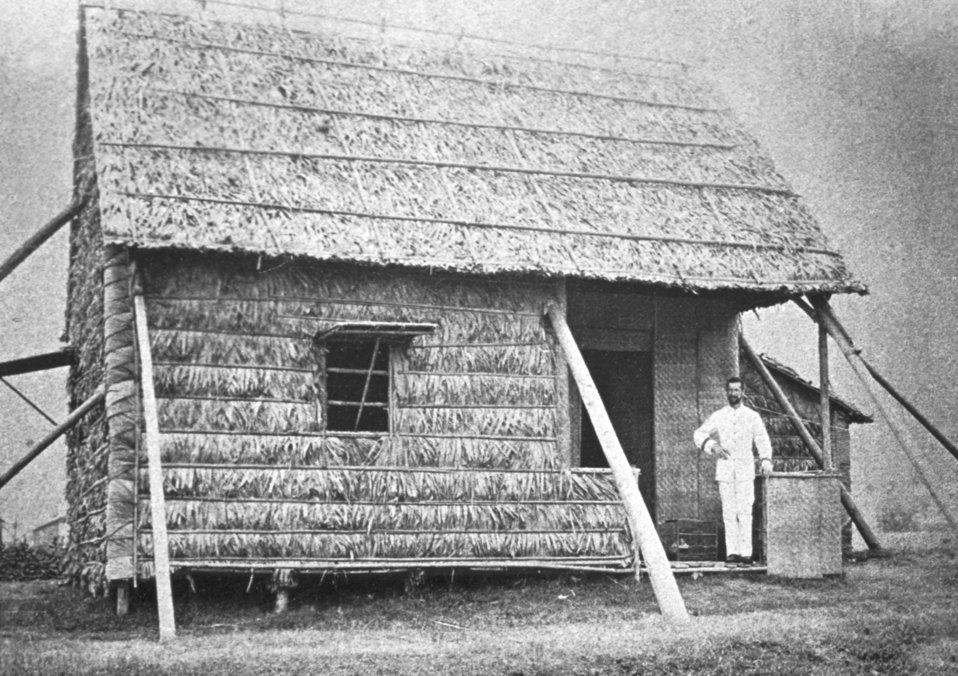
Dr. Alexandre Yersin in front of the National Quarantine Station, Shanghai Station, 1936.